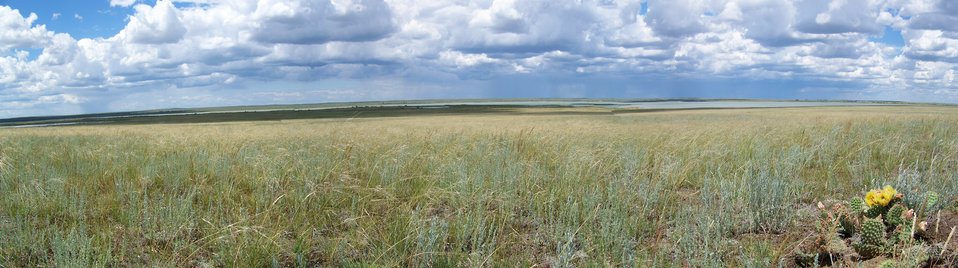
Bowdoin NWR Prairie

Native prairie on Big Island, Bowdoin NWR